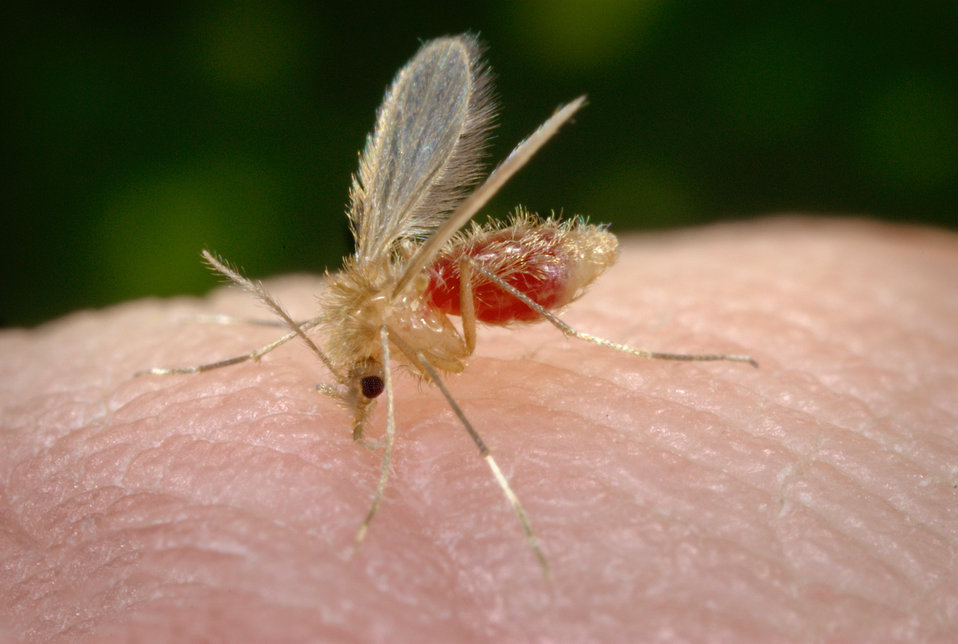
This photograph depicts a Phlebotomus papatasi sand fly, which had landed atop the skin surface of the photographer, who'd volunteered himself as host for this specimen's blood meal. The sand flies are members of the Dipteran family, Psychodidae, and the subfamily Phlebotominae. This specimen was still in the process of ingesting its bloodmeal, which is visible through its distended transparent abdomen. Sand flies such as this P. papatasi, are responsible for the spread of the vector-borne parasitic disease Leishmaniasis, which is caused by the obligate intracellular protozoa of the genus Leishmania.